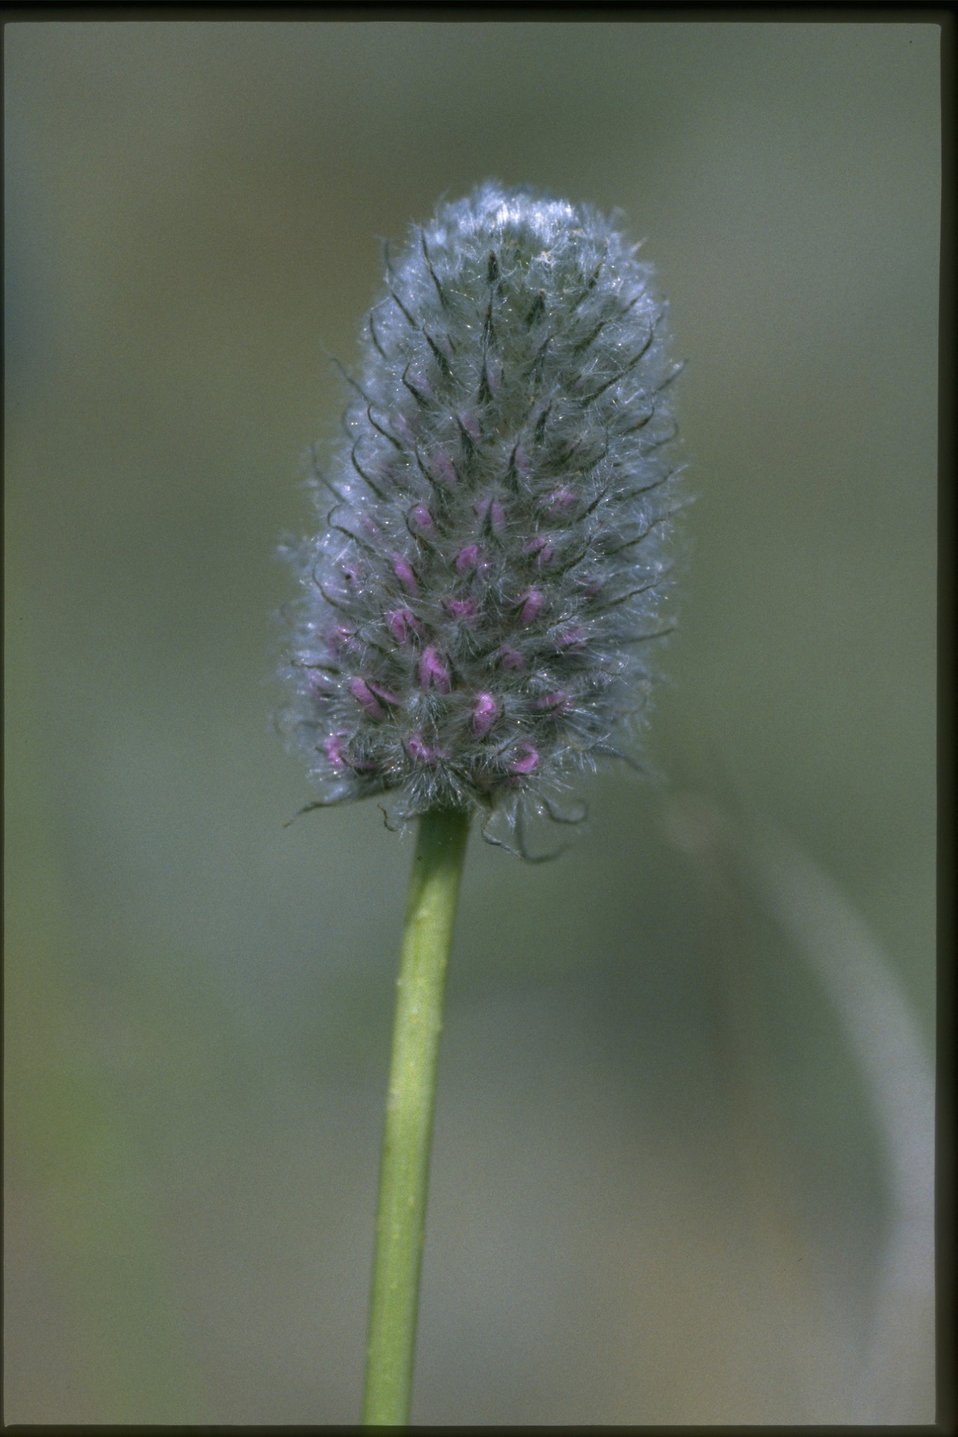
Closeup shot of Trifolium.